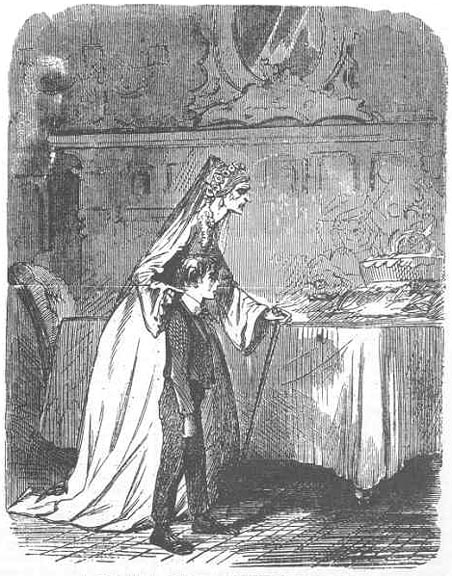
Miss Havisham's wedding-cake, by John McLenan